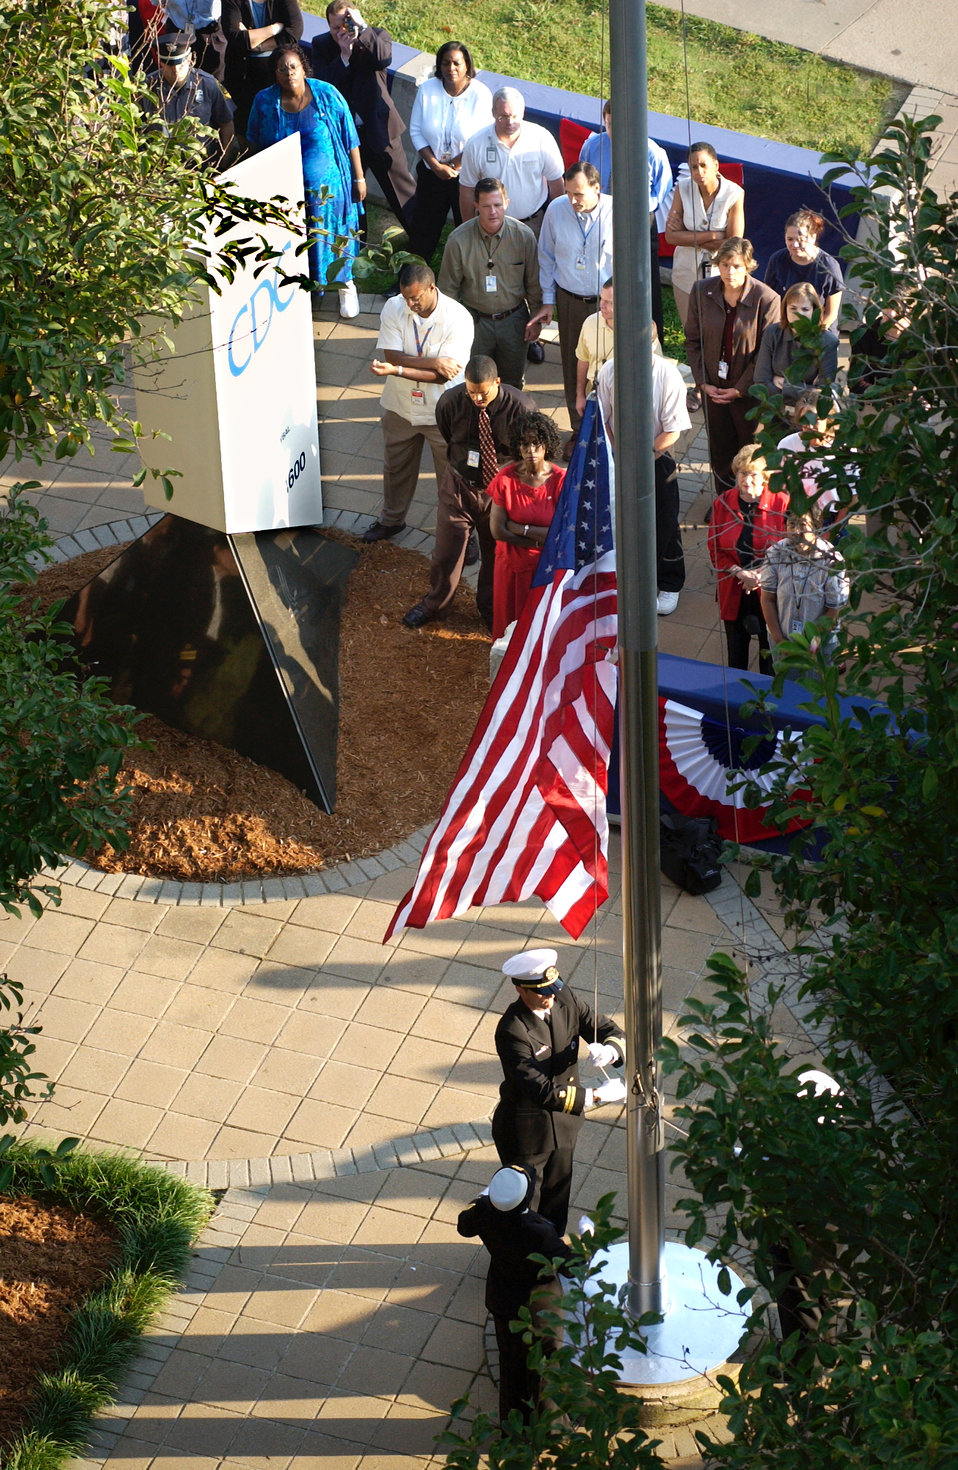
This was a September 11th observance ceremony held at the Centers for Disease Control, Clifton Road, Atlanta offices.